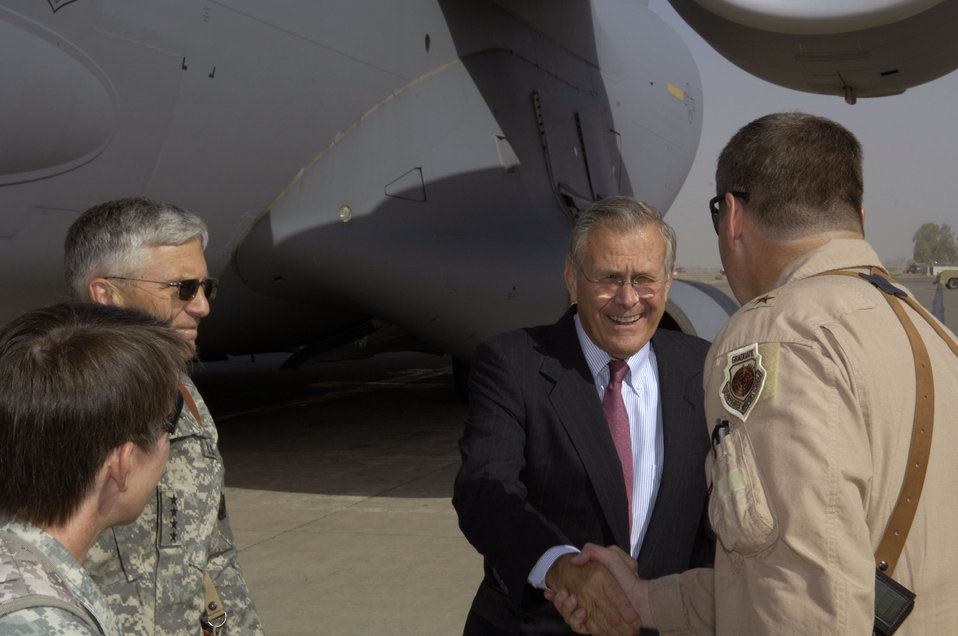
Secretary Rumsfeld visits Balad AB

Secretary of Defense Donald H. Rumsfeld shakes hands with Brig. Gen. Robin Rand as he arrives at Balad Air Base, Iraq, on July 12. Secretary Rumsfeld is visiting Iraq to talk with servicemembers. General Rand is commander of the 332nd Air Expeditionary Wing.